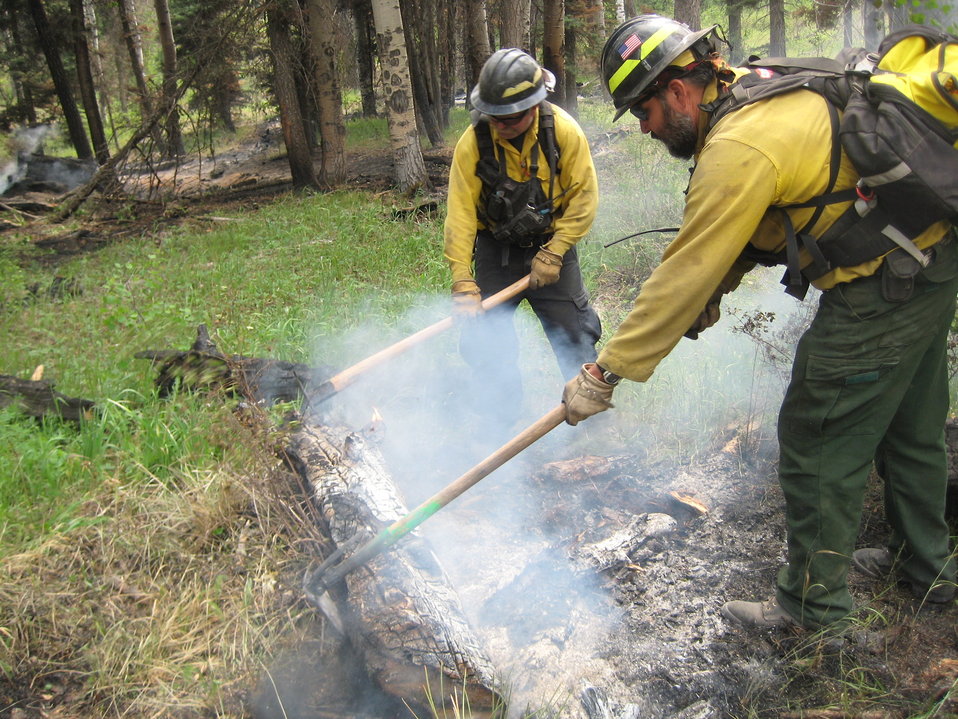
Firefighters work to remove the heat from a burning timber at the Little Sand Wildfire in the San Juan National Forest near Pagosa Springs, CO on Tuesday, June 12, 2012. The wildfire was started by a lightening strike on May 13, 2012. The fire is in rugged and inaccessible terrain, north of the Piedra River, and is currently estimated at 14,224 acres with 30% containment as of June 20, 2012.